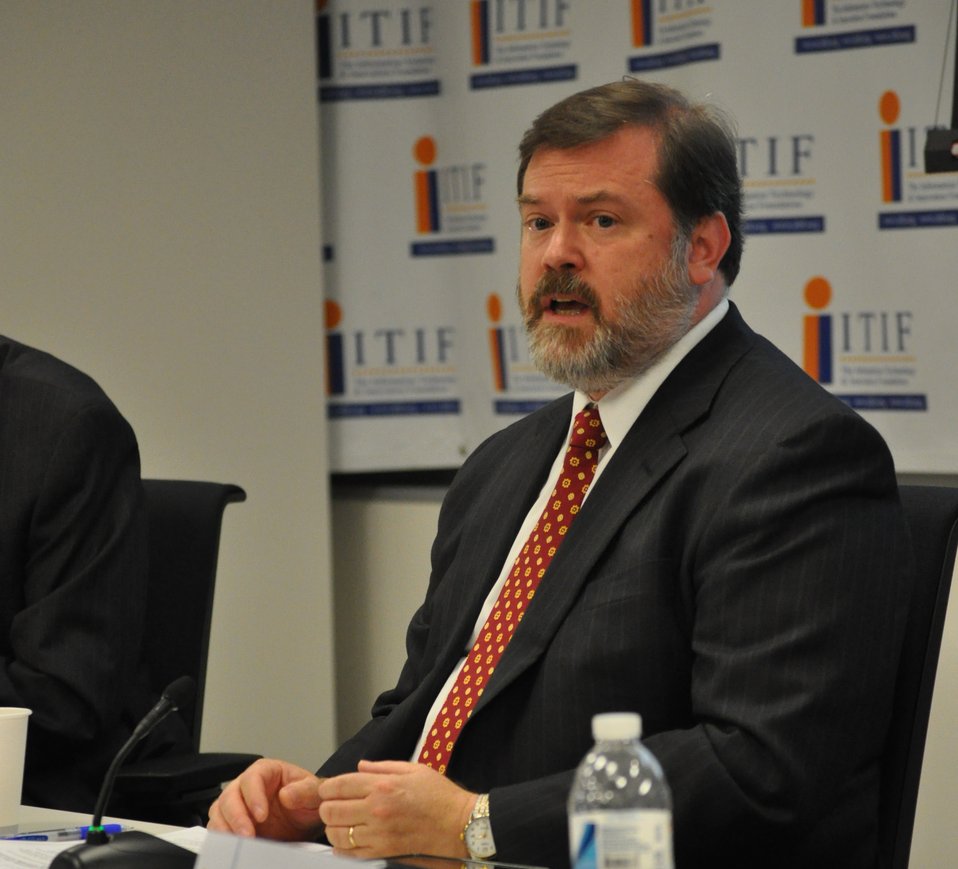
mHealth Task Force Findings and Recommendations Event - DSC 0667